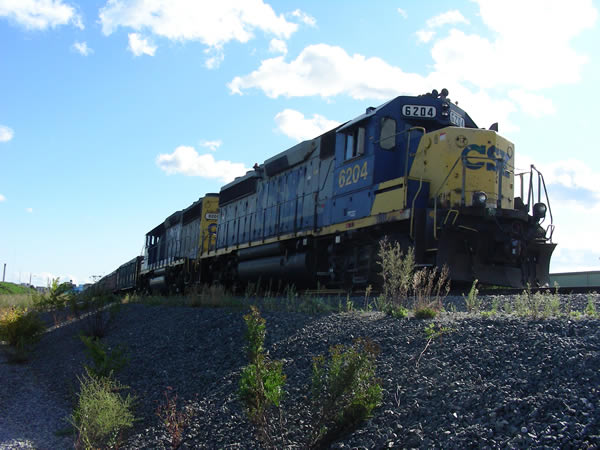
August 2009, Full rail cars leave New Bedford